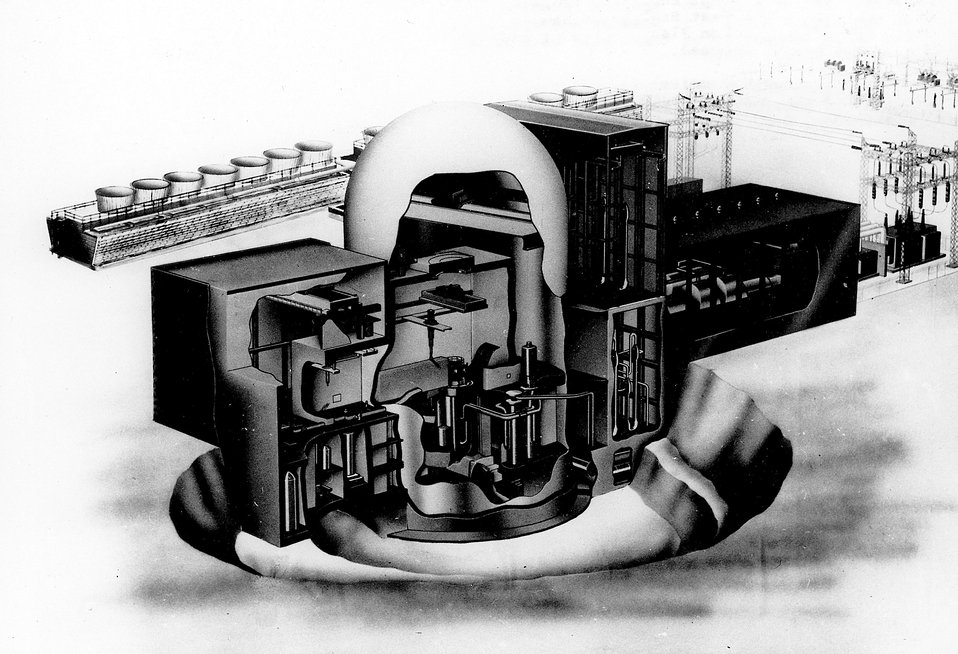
Artist's concept showing interior of the Liquid Metal Fast Breeder Reactor. c. 1974